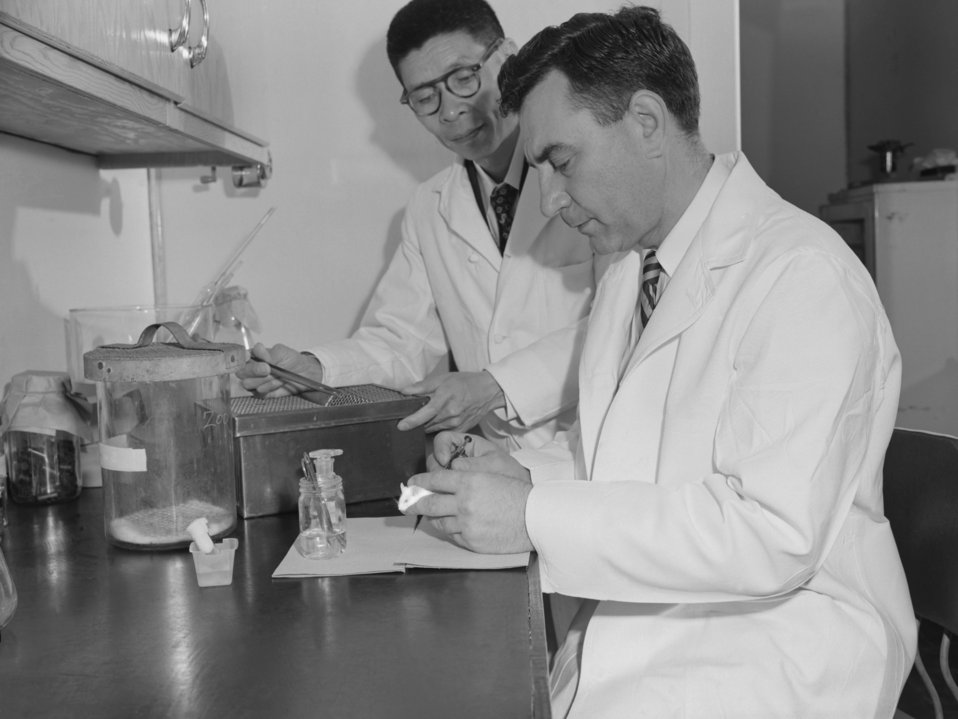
Here two scientists are conducting polio research in Montgomery, Alabama.